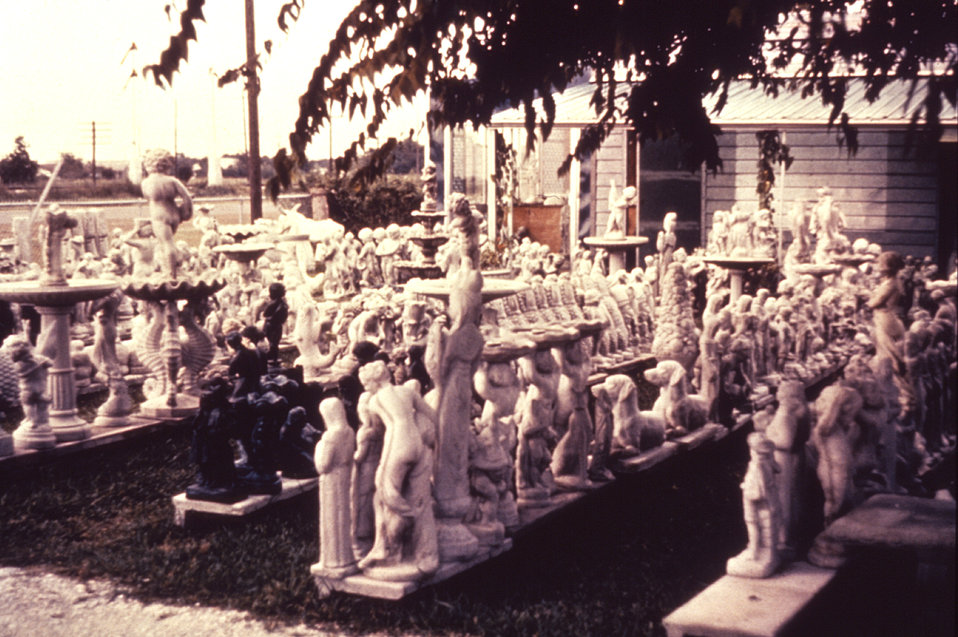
This 1974 photograph depicted a storage/display yard for a concrete sculpture vendor, where, due to there ability to retain water, the outdoor sculptures acted as ideal mosquito breeding habitats.